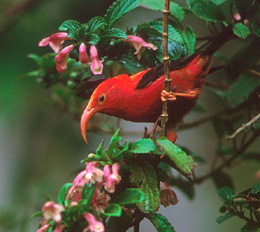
'I'iwi on native mint - Hakalau Forest NWR

The long, down-curved, orange bill of the 'I'iwi in the Hakalau Forest NWR helps it sip nectar from tubular flowers.